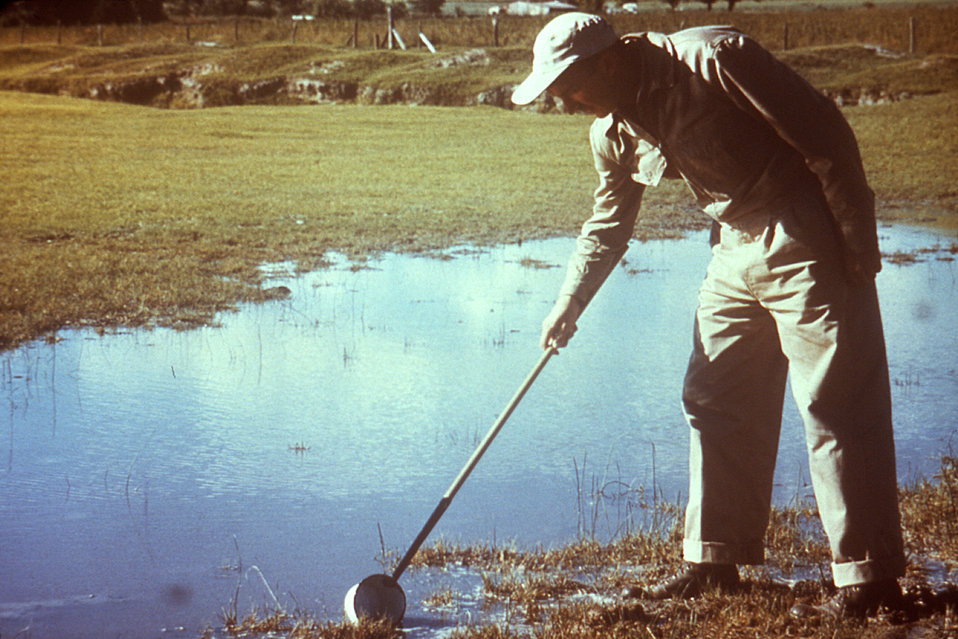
This 1981 photograph depicted an entomologic field technician who was in the process of using a dipper while analyzing the vegetated edge of a shallow pond for the presence of possible arboviral vector larvae.